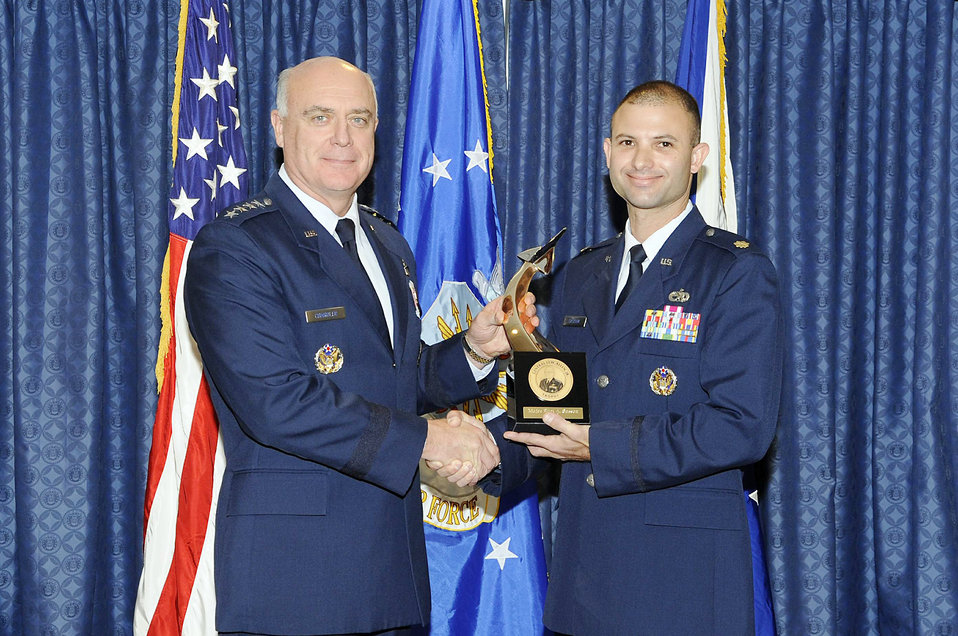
Airmen earn Gen. Lew Allen Award

Gen. Carrol H.